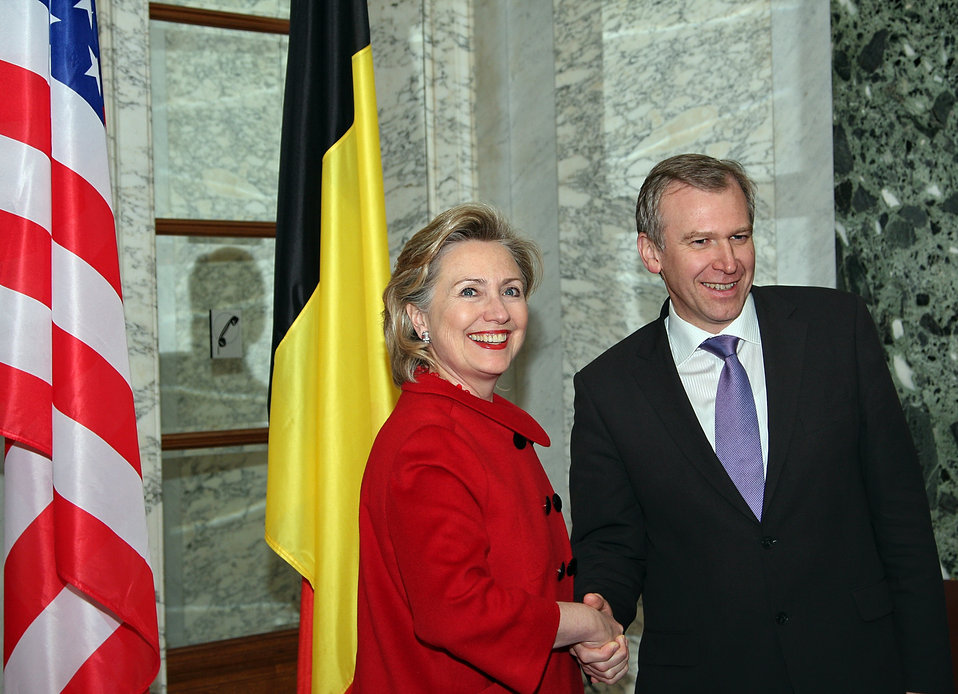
Secretary Clinton Meets With Belgian Officials

U.S. Secretary of State Hillary Rodham Clinton meets with Belgian officials at Val Duchesse in Brussels, Belgium December 4, 2009. [U.S. Embassy Brussels by Freddy Moris / Public Domain]